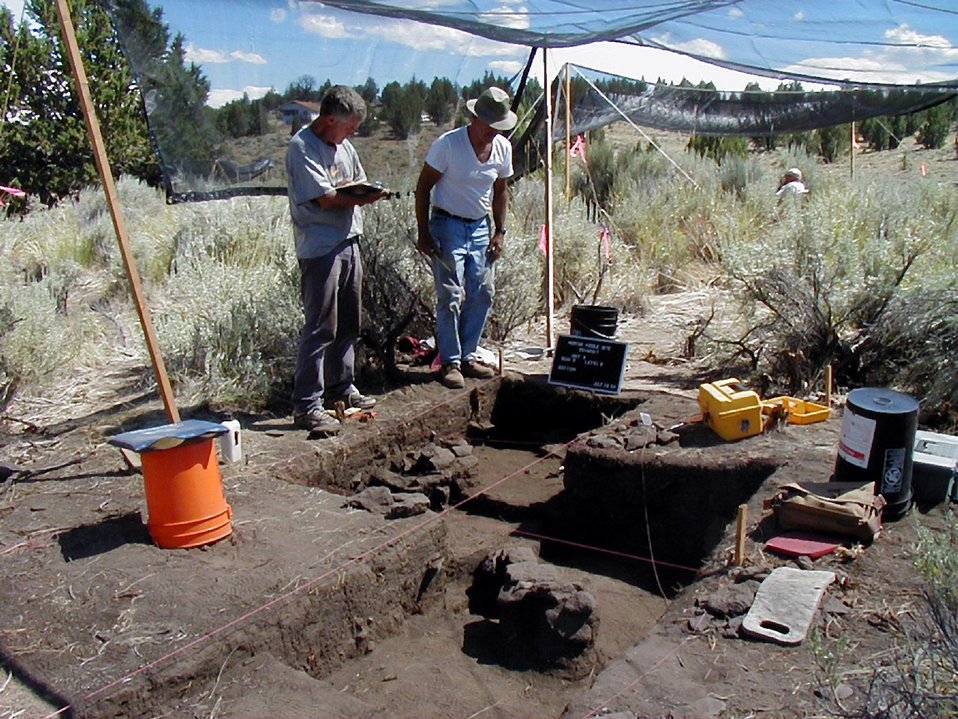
Oregon Archaeological Society and other volunteers have contributed thousands of hours of labor to on-going archaeological work at Burns BLM sites.